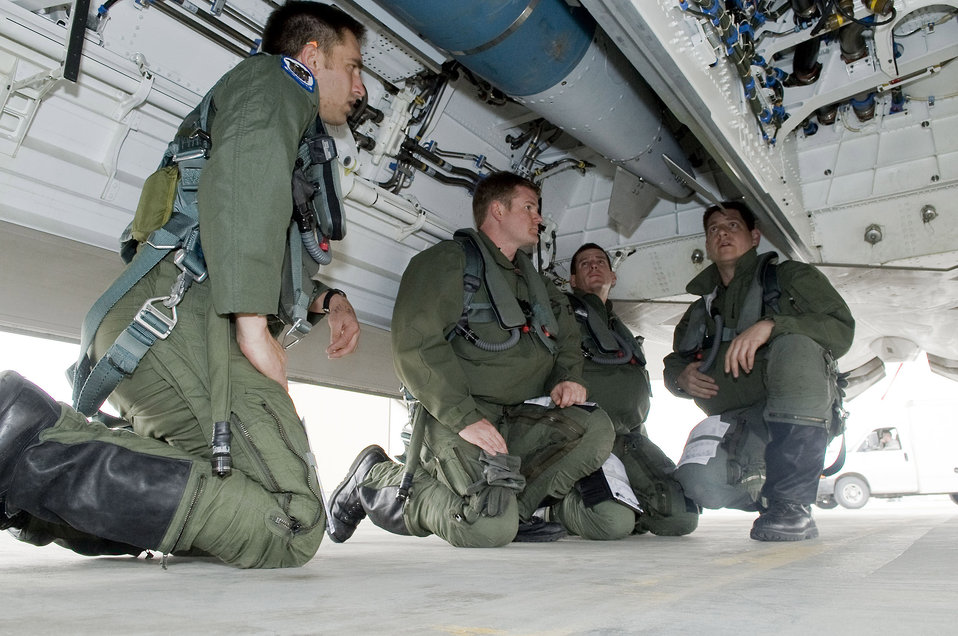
Bombs on target

Pilots from the 525th Fighter Squadron discuss what to look for when a Joint Direct Attack Munition is loaded onto an F-22 Raptor April 14 at Elmendorf Air Force Base, Alaska. A 525th Fighter Squadron pilot dropped a JDAM that uses a guidance kit to direct the bomb onto a target.